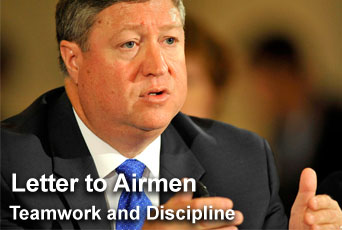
Letter to Airmen

In his latest Letter to Airmen, acting Secretary of the Air Force Michael B. Donley highlights areas of interest that top leadership will focus in the coming months.